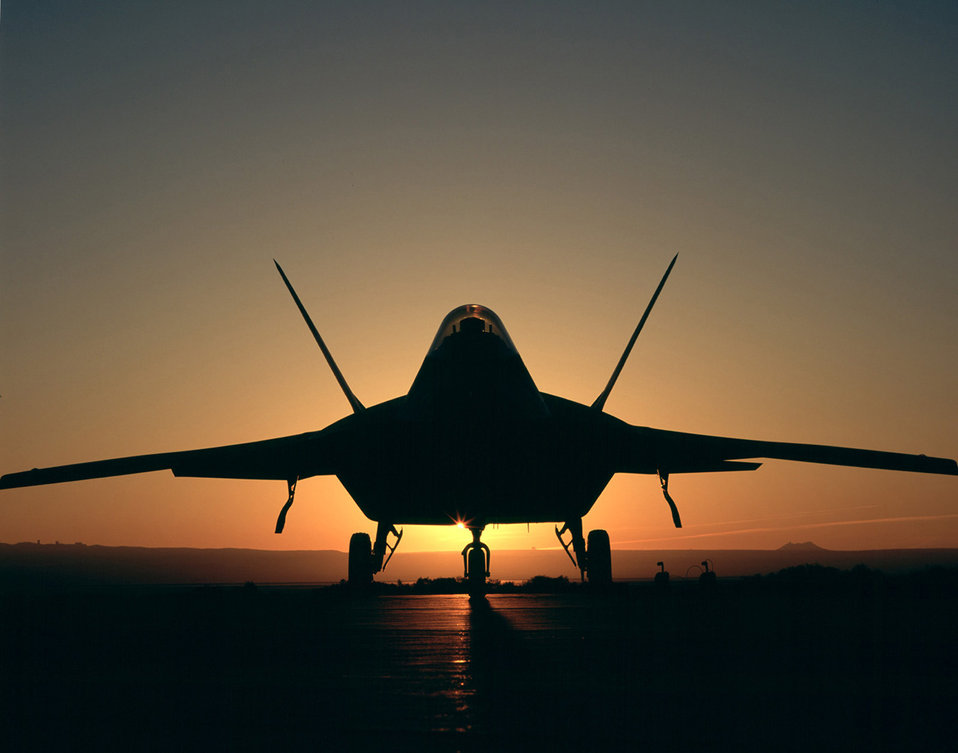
The future fighter

FILE PHOTO --The application of advanced avionics software in the F/A-22 is key to the Raptor's revolutionary performance advantage over any other fighter. In the air-to-air arena, the stealthy F/A-22 will be virtually unseen on radar, while its sophisticated array of sensors and advanced radar will allow it to reach out and strike adversary aircraft undetected from long range. The advanced software package will also enhance the Raptor's ability to deliver precision air-to-surface weapons on target, day or night, in any weather.